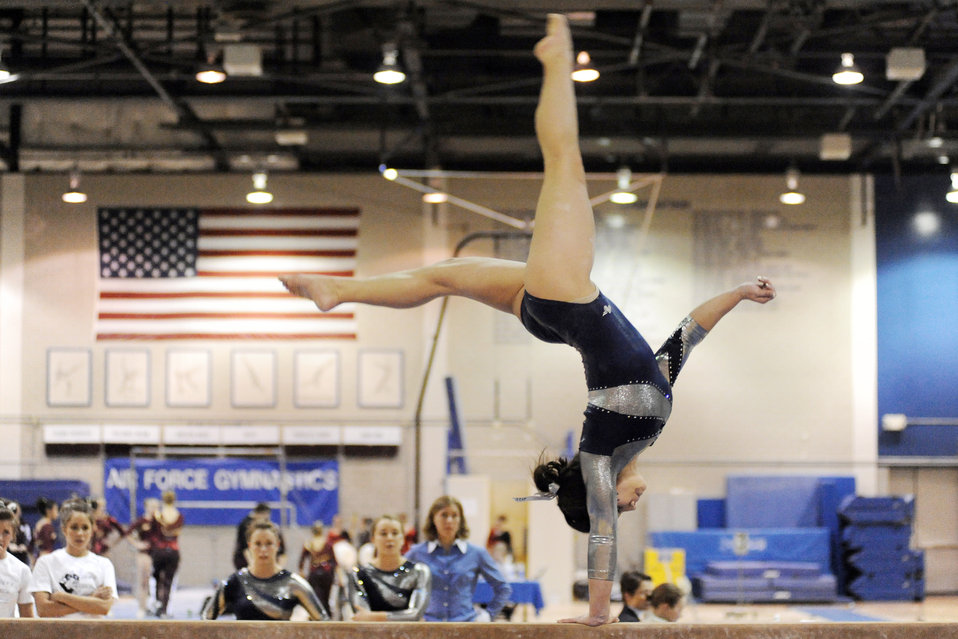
Women gymnasts compete in tri-meet

Freshman Britany Calley performs on the balance beam during the home tri-meet against Southeast Missouri State and Seattle-Pacific in the U.S. Air Force Academy's Cadet Gym Feb. 20, 2010. Air Force placed second in the team competition with a score of 188.00. Southeast Missouri came in first with 194.05 and Seattle Pacific finished with 187.075.